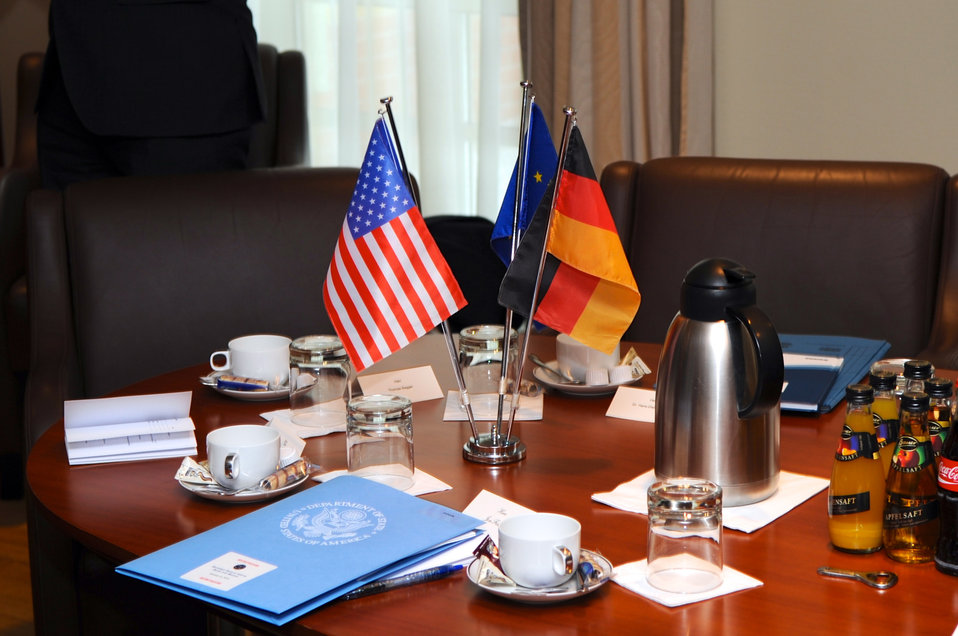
German, U.S., and E.C. Flags Adorn Berlin Meeting Table

German, U.S., and European Commission flags adorn the table before a bilateral discussion between U.S. Secretary of State John Kerry and German Foreign Minister Frank-Walter Steinmeier in Berlin on January 31, 2014.